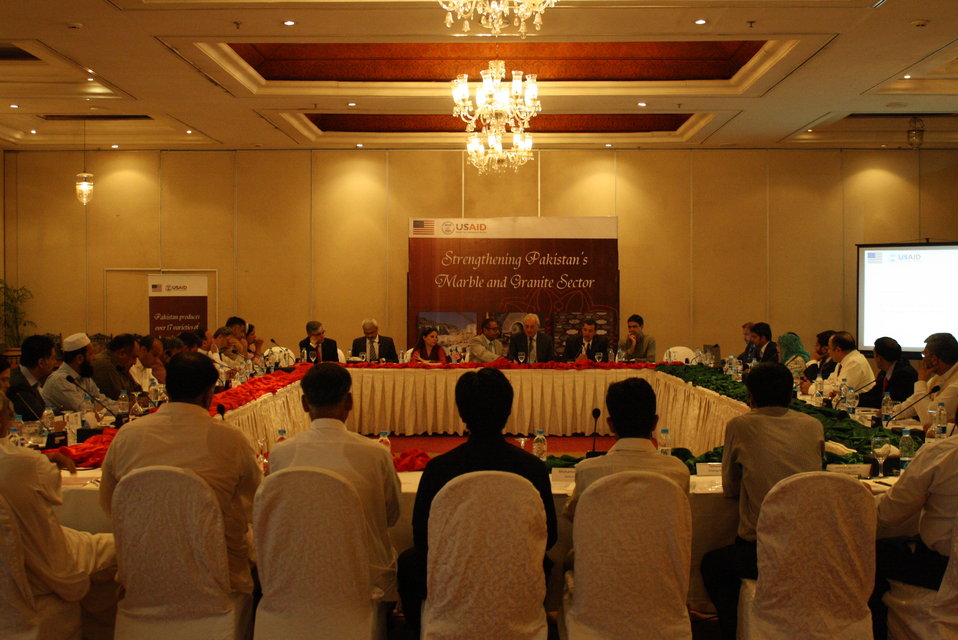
First Consultative Meeting with Marble and Granite Sector Stakeholders 5